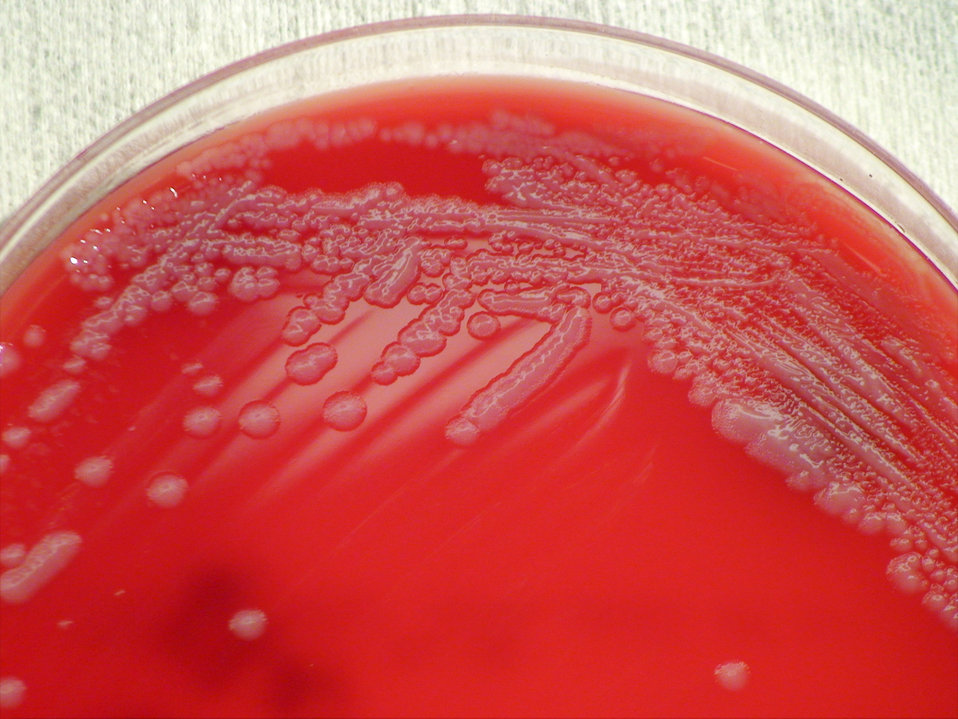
A closer view of PHIL 12379, this photograph depicts the colonial morphology displayed by Gram-positive Bacillus flexus bacteria, which was grown on a medium of sheep's blood agar (SBA), for a 24 hour time period, at a temperature of 37�C.